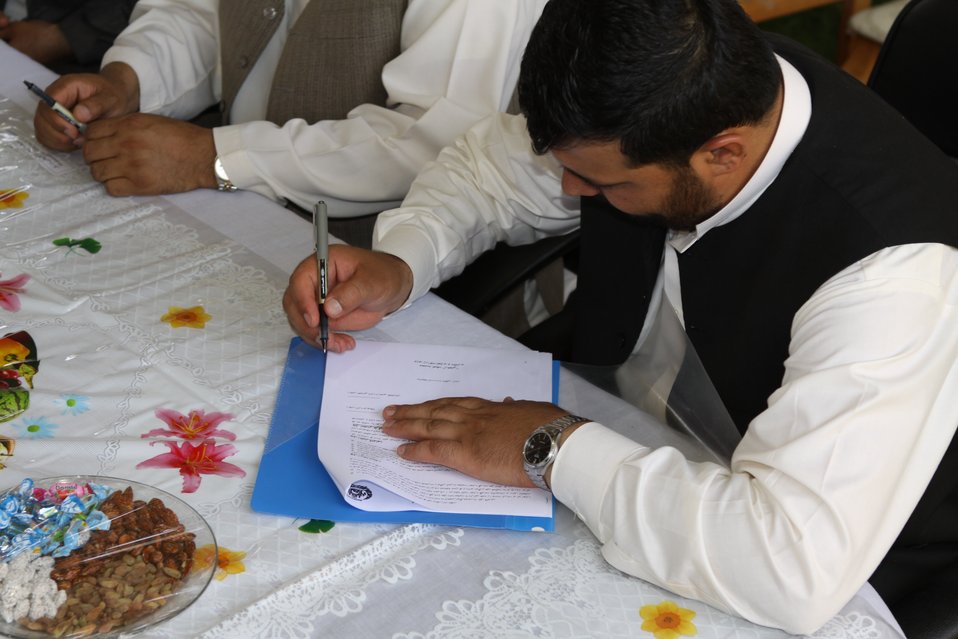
Bolan Poultry Farm